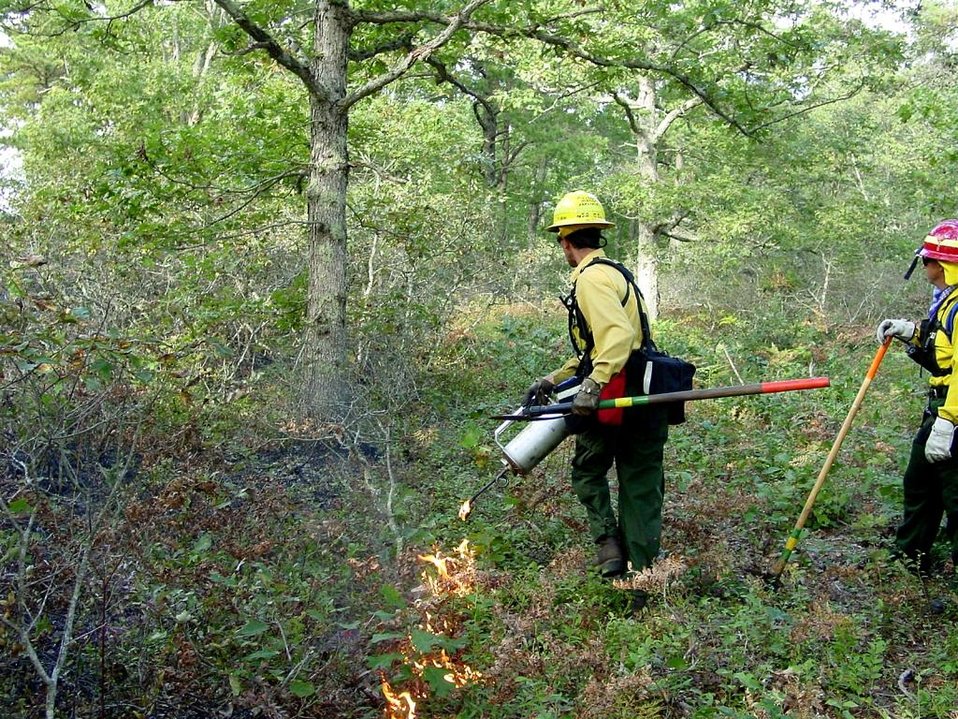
Prescribed fire, September 2006

The natural processes that have historically created early forest habitat are suppressed due to human development, population density, dam building, and wildfire suppression. Hands-on management is needed to mimic these natural processes.